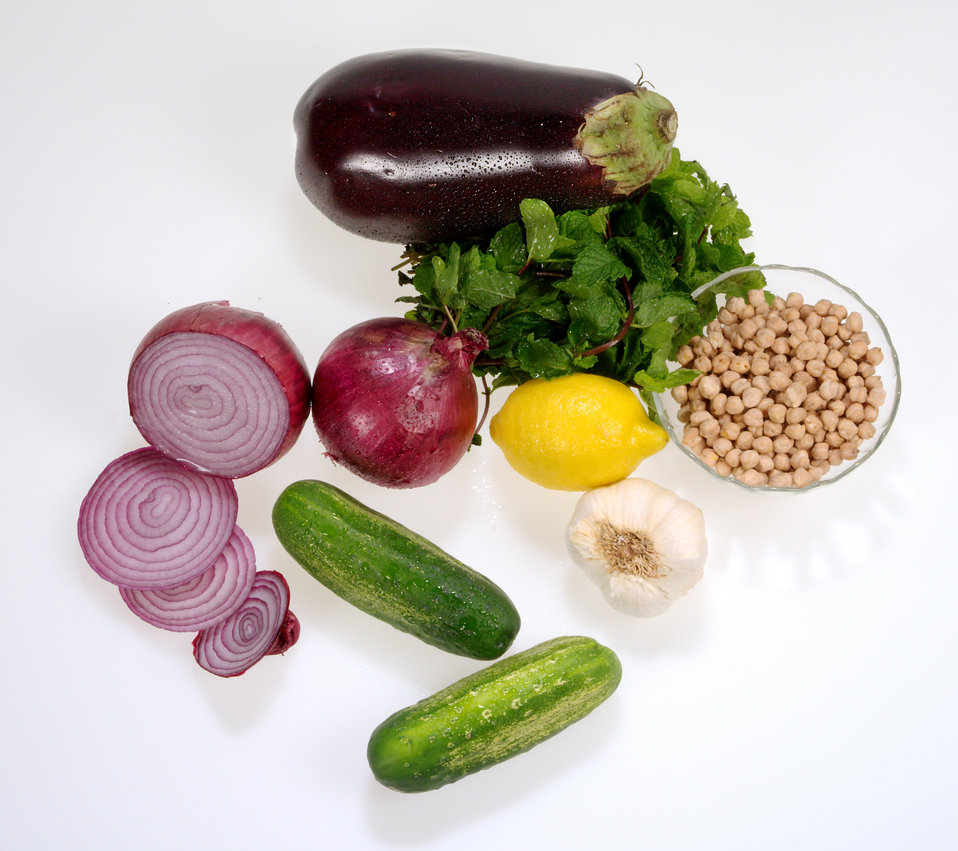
This image is actually a still life of healthy vegetables, including an eggplant, red onions, a lemon, cucumbers, garlic, chickpeas, and herbs.